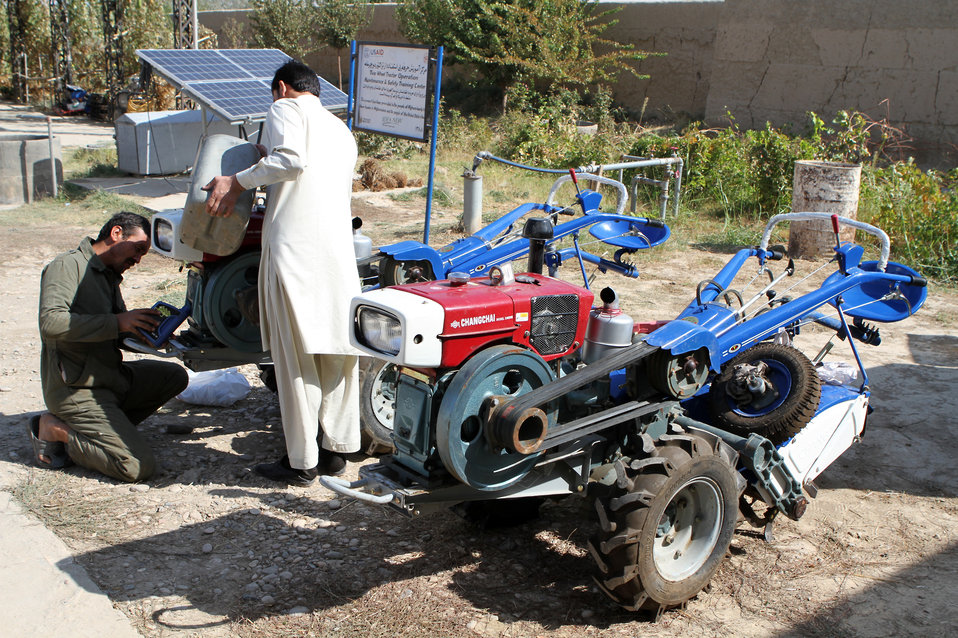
USAID funded two wheel tractor